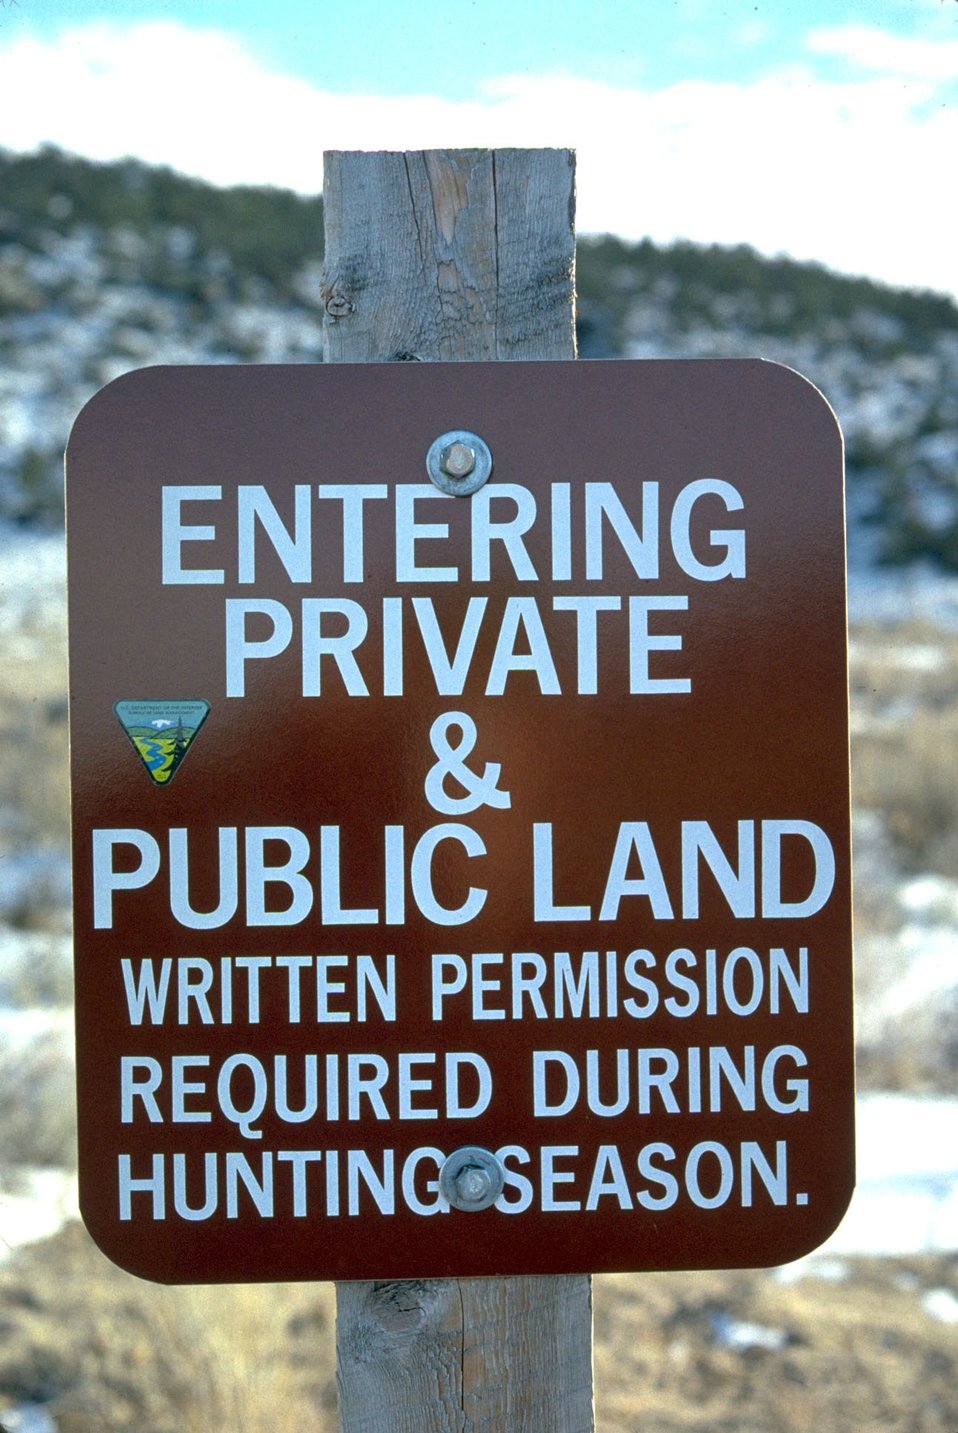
Blm sign for private and public land